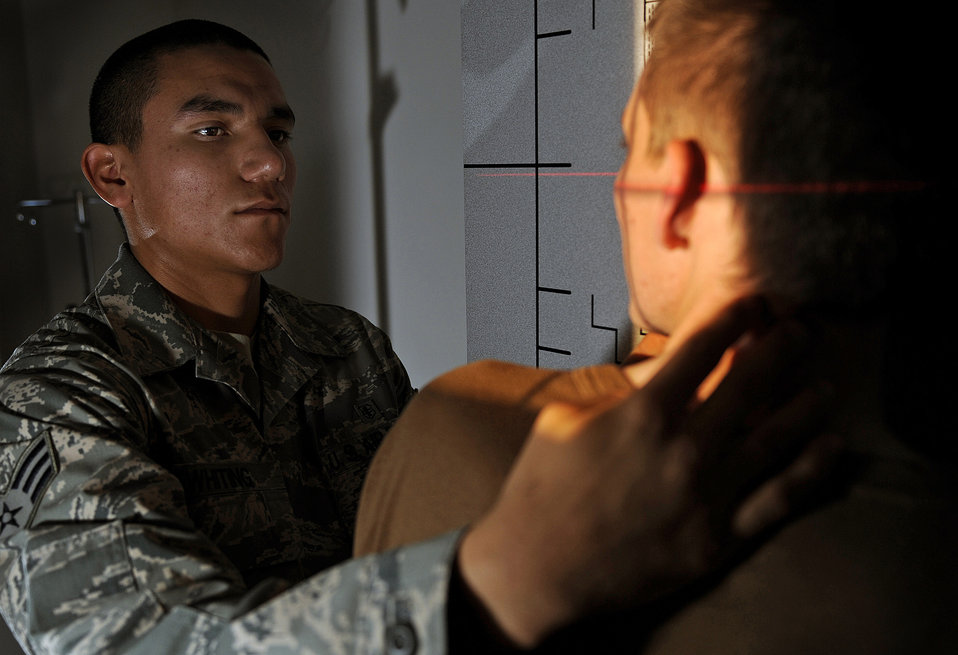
Getting a look inside

Senior Airman David Whiting (left) positions a patient Nov. 25 before taking an X-ray. Airman Whiting is a diagnostic imaging technician with the 28th Medical Support Squadron at Ellsworth Air Force Base, S.D.